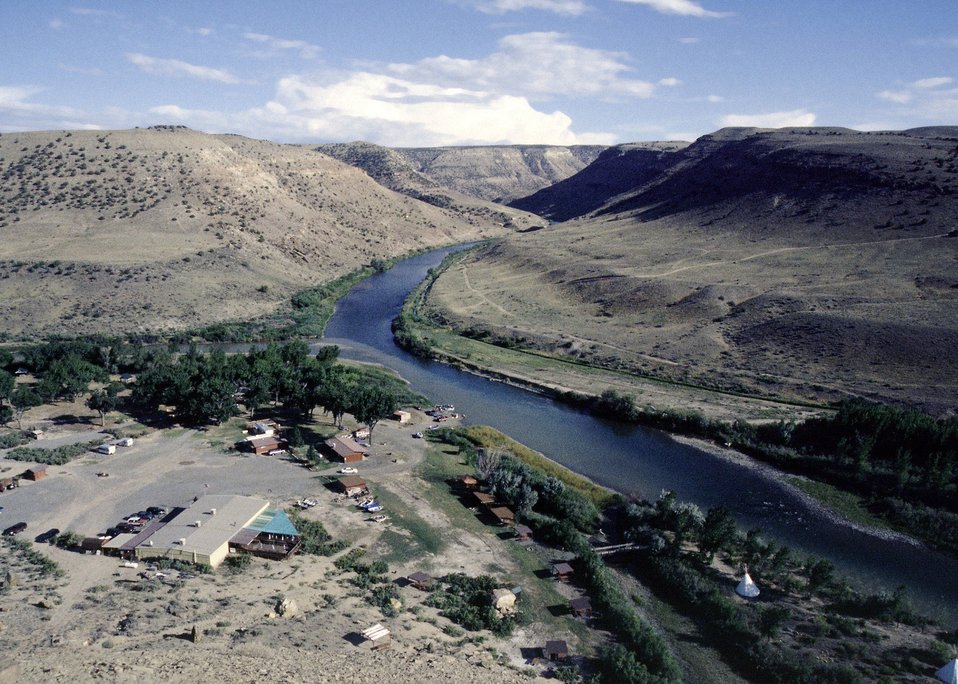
Rafting